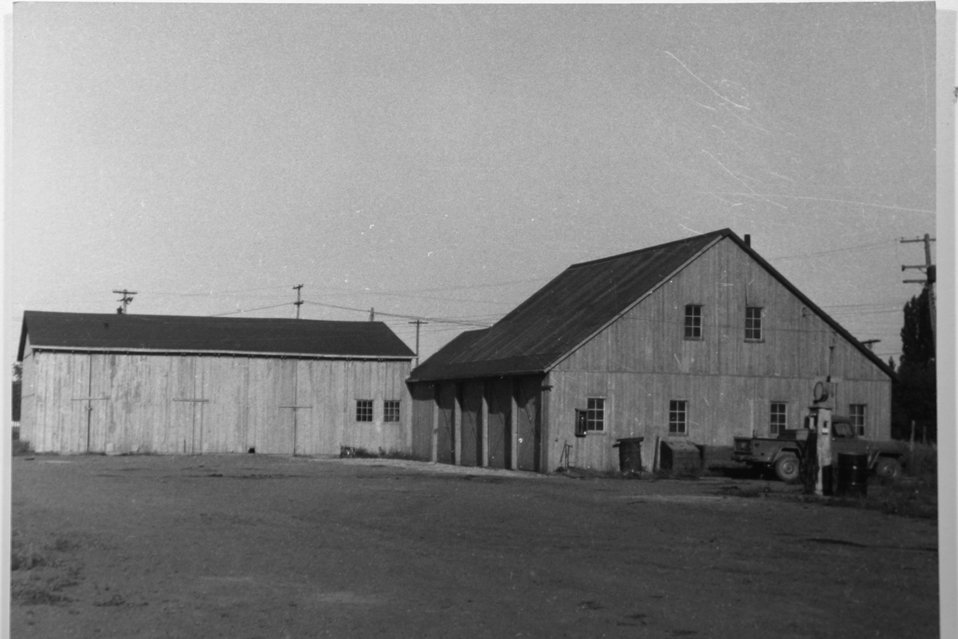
Old BLM Wareyard on Filmore Avenue, Burns, Oregon. July 1954. Former CCC Camp